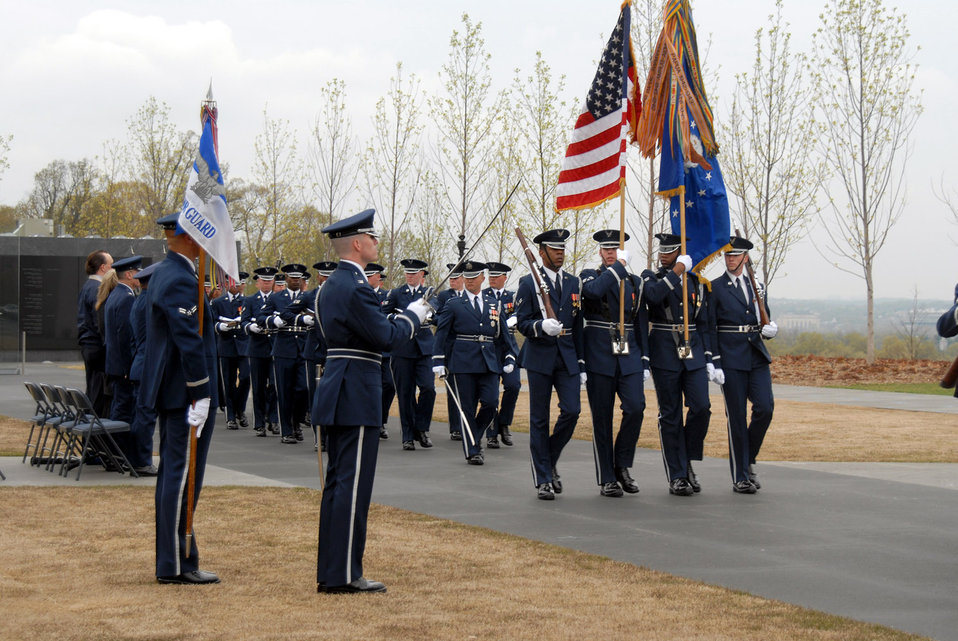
Air Force Review held at memorial

The Air Force Honor Guard performs a pass and review ceremony for the reviewing official, Maj. Gen. L. Robert Smolen, April 14 at the Air Force Memorial in Arlington, Va. General Smolen is the Air Force District of Washington commander.